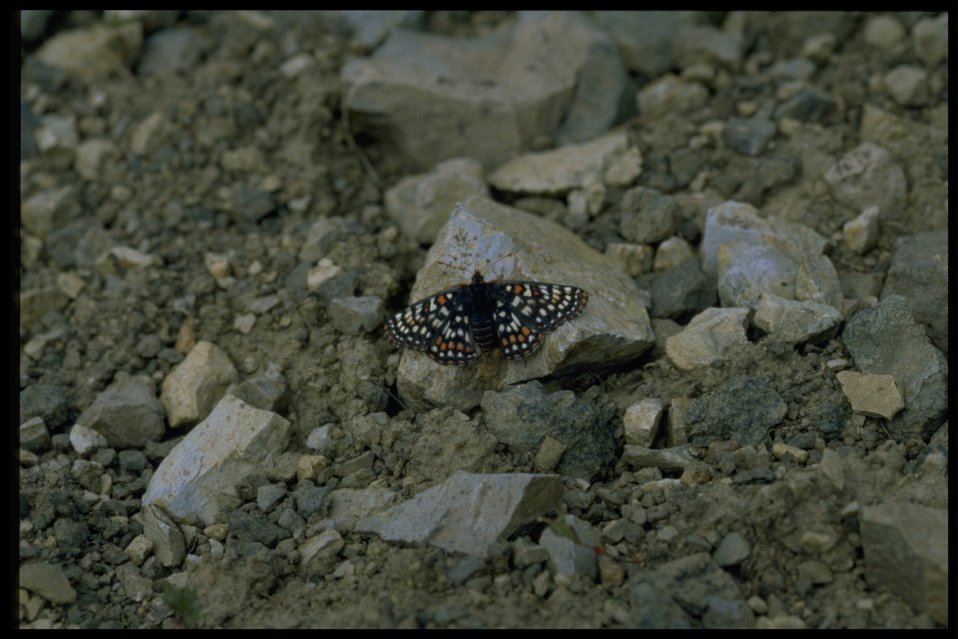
Unidentified moth or butterfly.